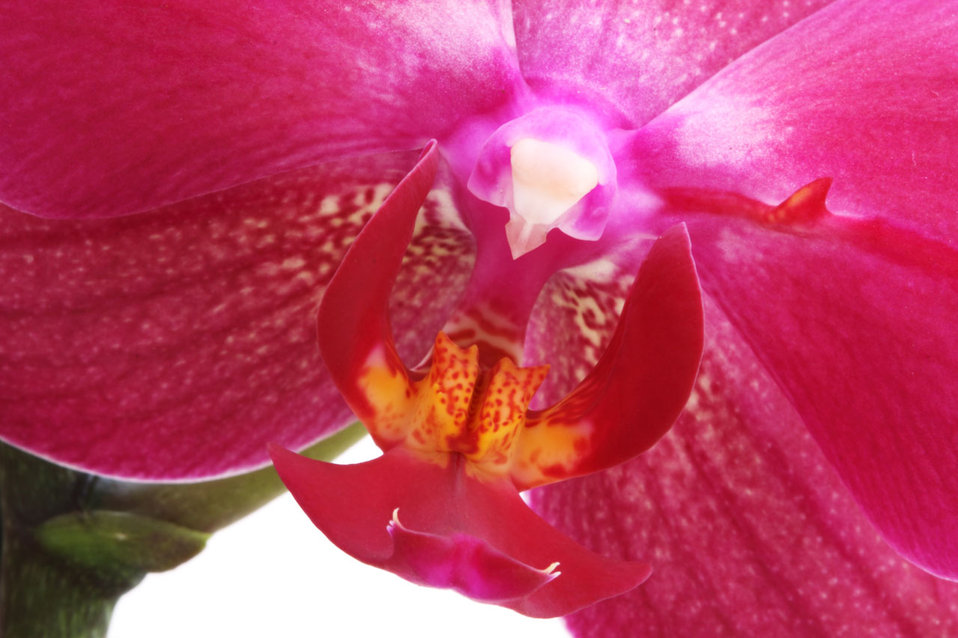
Orchid flower

Pink orchid flower.